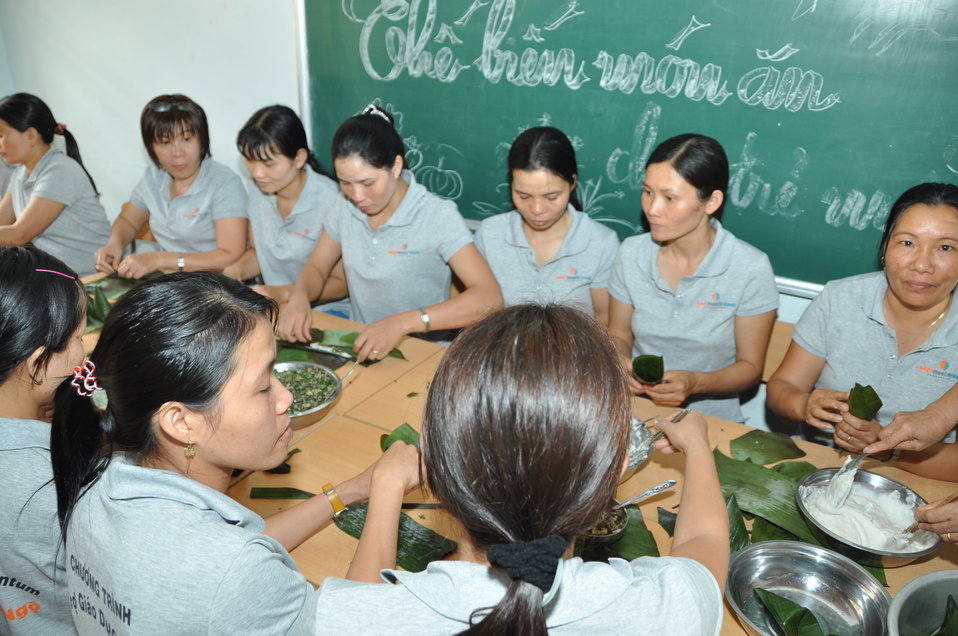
USAID and EMW support teacher training for young ethnic minority children in Kon Tum, Vietnam